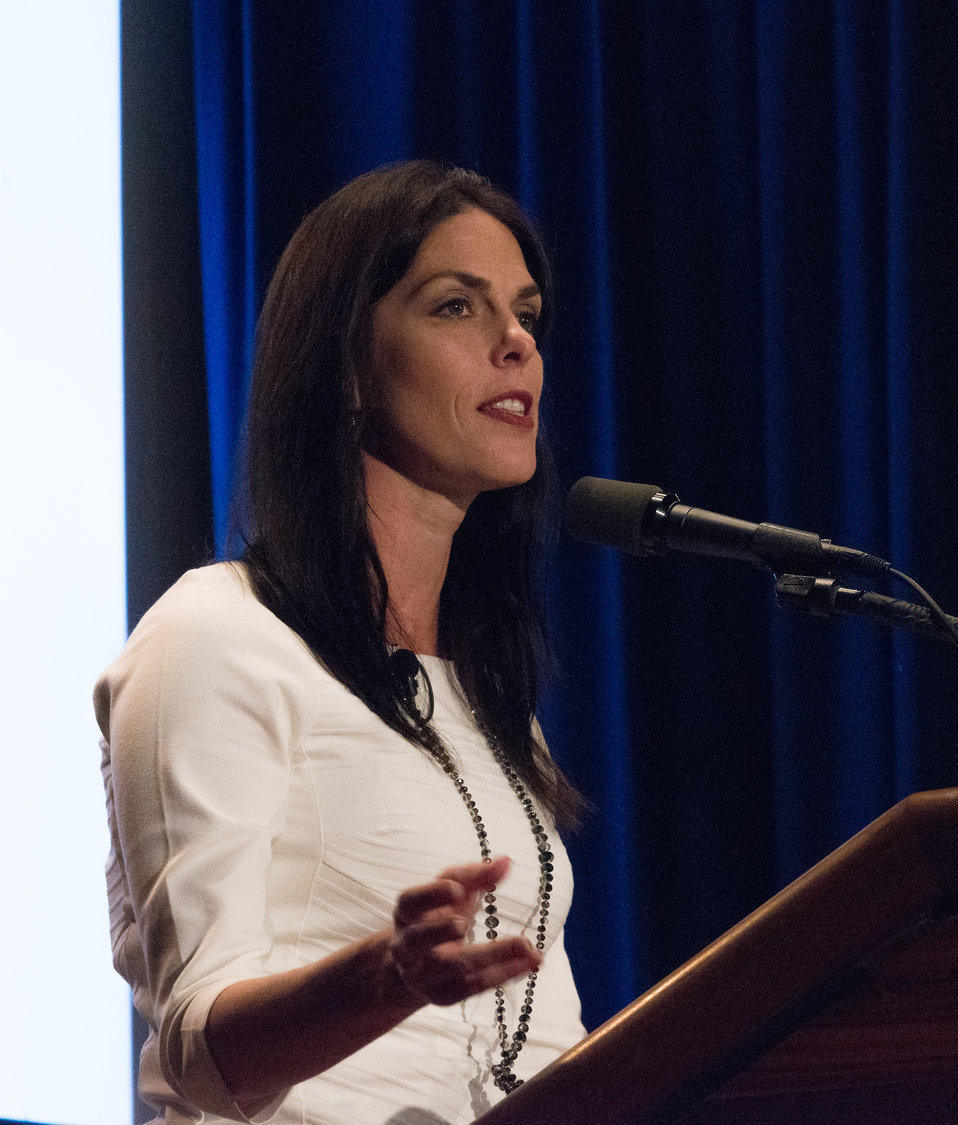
Borlaug Institute for International Agriculture at Texas A and M Director of External Relations and granddaughter of Dr. Norman Borlaug, Julie Borlaug moderates the Borlaug Symposium commemorating the late Dr. Borlaug's 100th Birthday in Jefferson Auditorium of the U.S. Department of Agriculture (USDA) in Washington, D.C. on Tuesday, Mar. 25, 2014. The symposium highlights current efforts addressing global hunger. Panels will feature high school and university students, as well as, scientists and policy advisors at U.S. Agency for International Development (USAID), USDA and Non-Governmental Organizations (NGO). Questions from students and interns are given priority to panelists. Lightening presentations will have leading students and individuals present what they are doing to help achieve Dr. Borlaug’s vision of creating the next generation of hunger fighters. The symposium was planned in partnership with: USAID, Cornell University, Iowa State University, University of Minnesota, The Norman Borlaug Institute for International Agriculture, Texas A and M University, and the World Food Prize.